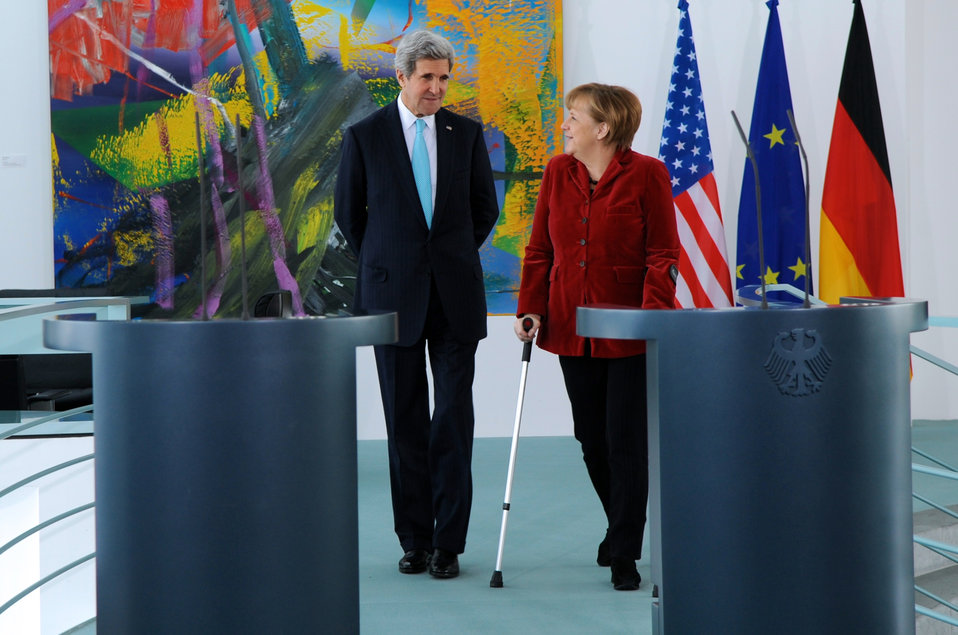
Secretary Kerry, German Chancellor Merkel Prepare to Make Press Statements in Berlin

German Chancellor Angela Merkel, using crutches since injuring herself in a cross-country ski accident, approaches a pair of podiums before she and U.S. Secretary of State John Kerry deliver statements to reporters at the Chancellery in Berlin, Germany, on January 31, 2014.